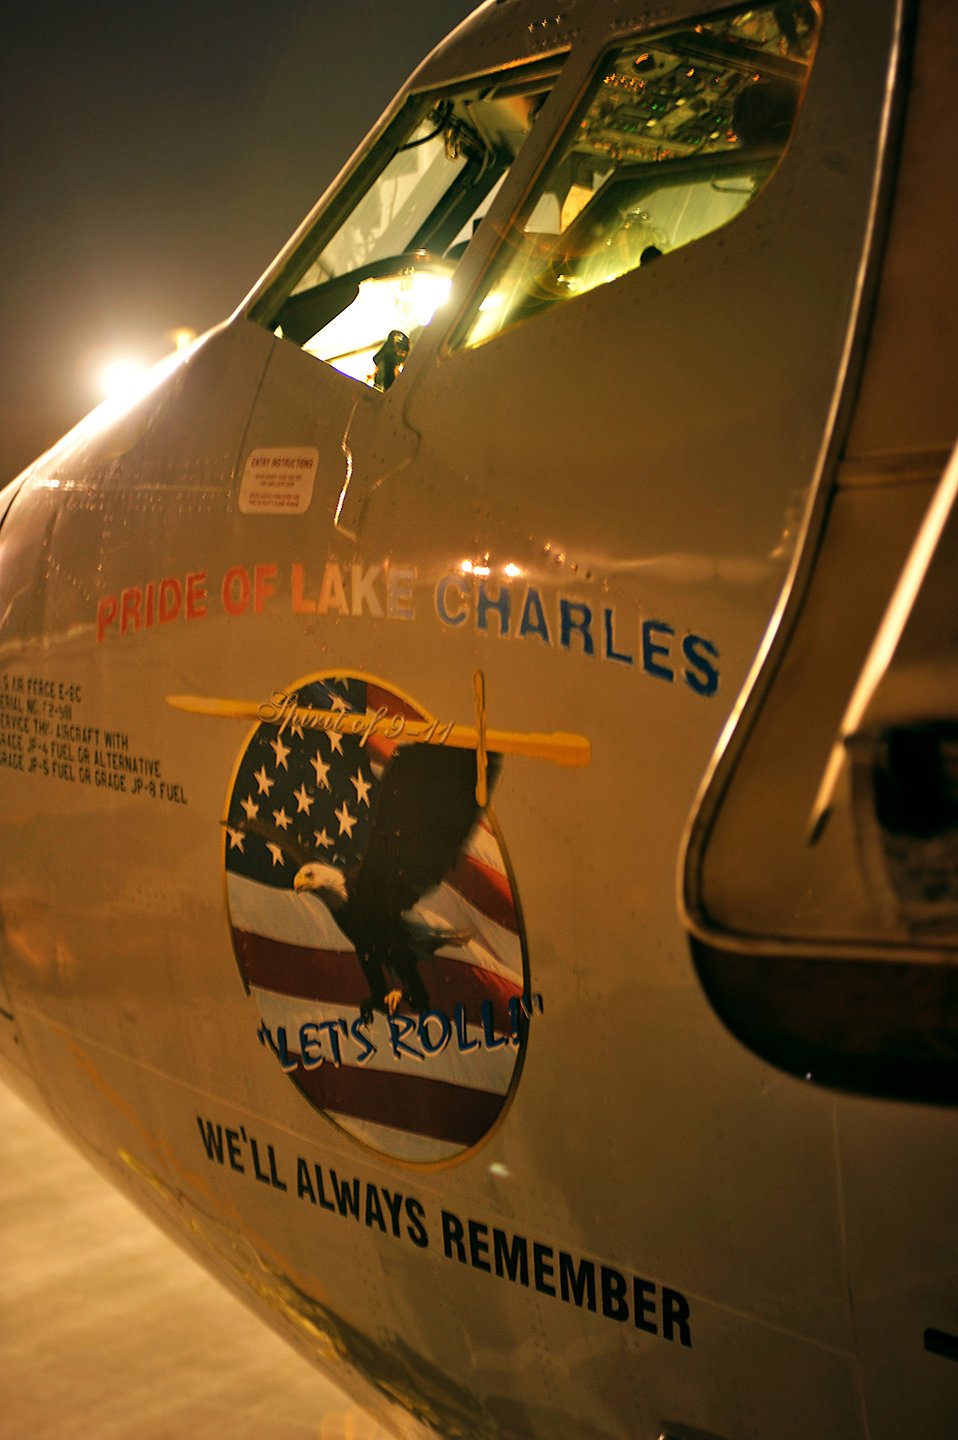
Joint STARS in the Desert Sky

A U.S. Air Force E-8C Joint Surveillance Target Attack Radar System (Joint STARS) from the 7th Expeditionary Air Combat and Control Squadron sits on the ramp before a mission over Iraq on Sept. 1. This flight marks 116th Air Control Wing’s Joint STARS 40,000 combat hours supporting the Global War on Terror. The E-8C Joint STARS is an airborne battle management, command and control, intelligence, and reconnaissance platform.